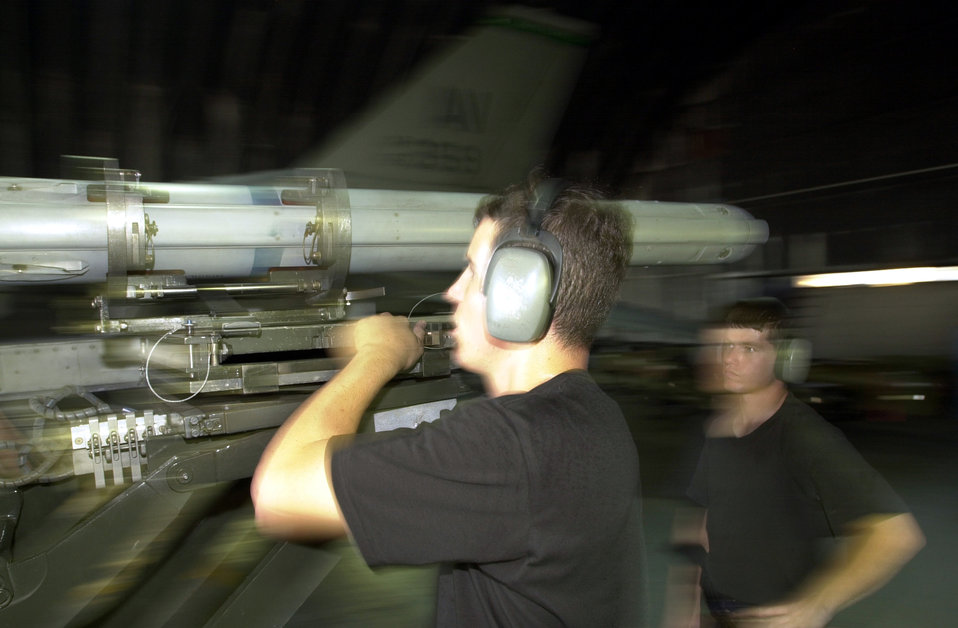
Local Salty Nation

AVIANO AIR BASE, Italy -- From left, Weapons Load Crew members from the 31st Aircraft Maintenance Squadron, Staff Sgt. Jay Forlino and Airman 1st Class Jonathan Mcinnis, prepare to load a missile on to an F-16 Viper during the Local Salty Nation exercise here July 23, 2003. The Local Salty Nation exercise is in preparation for a NATO Tactical Evaluation scheduled for spring 2004. In addition to performing everyday operations in a chemical environment, personnel must perform self-aid and buddy care, post attack and unexploded ordnance reconnaissance and setting up a contamination control areas.